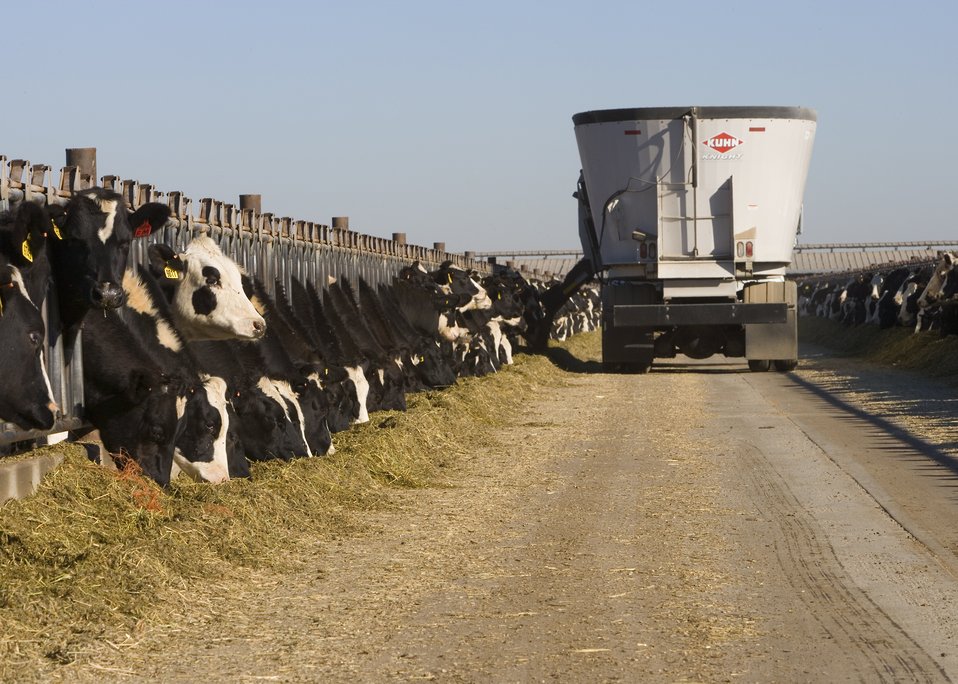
Feeding cows at a dairy farm in California.